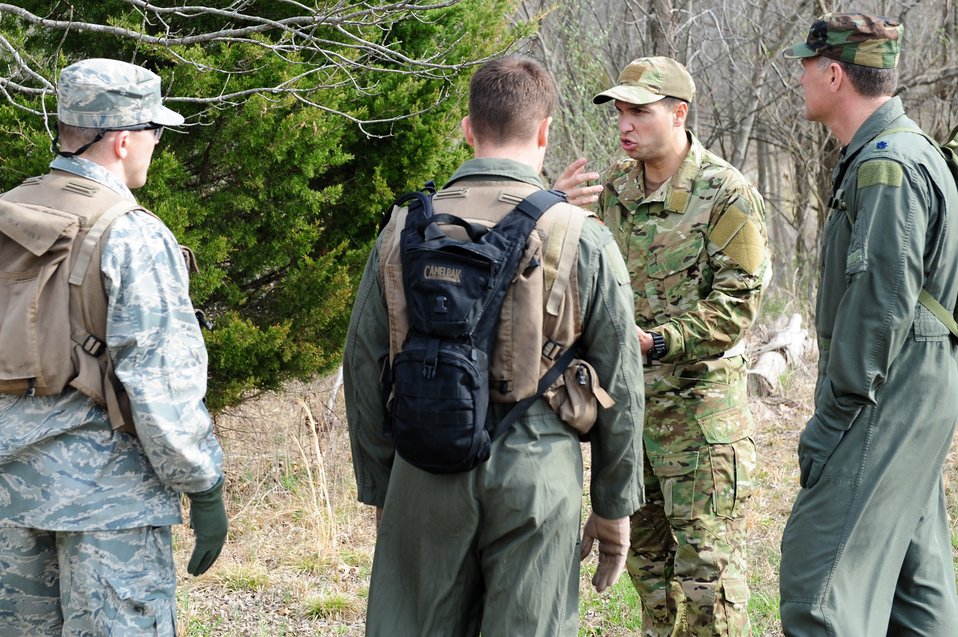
Combat survival training

Tech. Sgt. Robert Graham briefs aircrew members on the day's objective and their time limit on completing the objective March 22, 2011, during combat survival training at the Illinois Army National Guard's Sparta Training Area in Sparta, Ill. Sergeant Graham is a survival, evasion, resistance and escape specialist assigned to the 375th Operations Support Squadron at Scott Air Force Base, Ill.